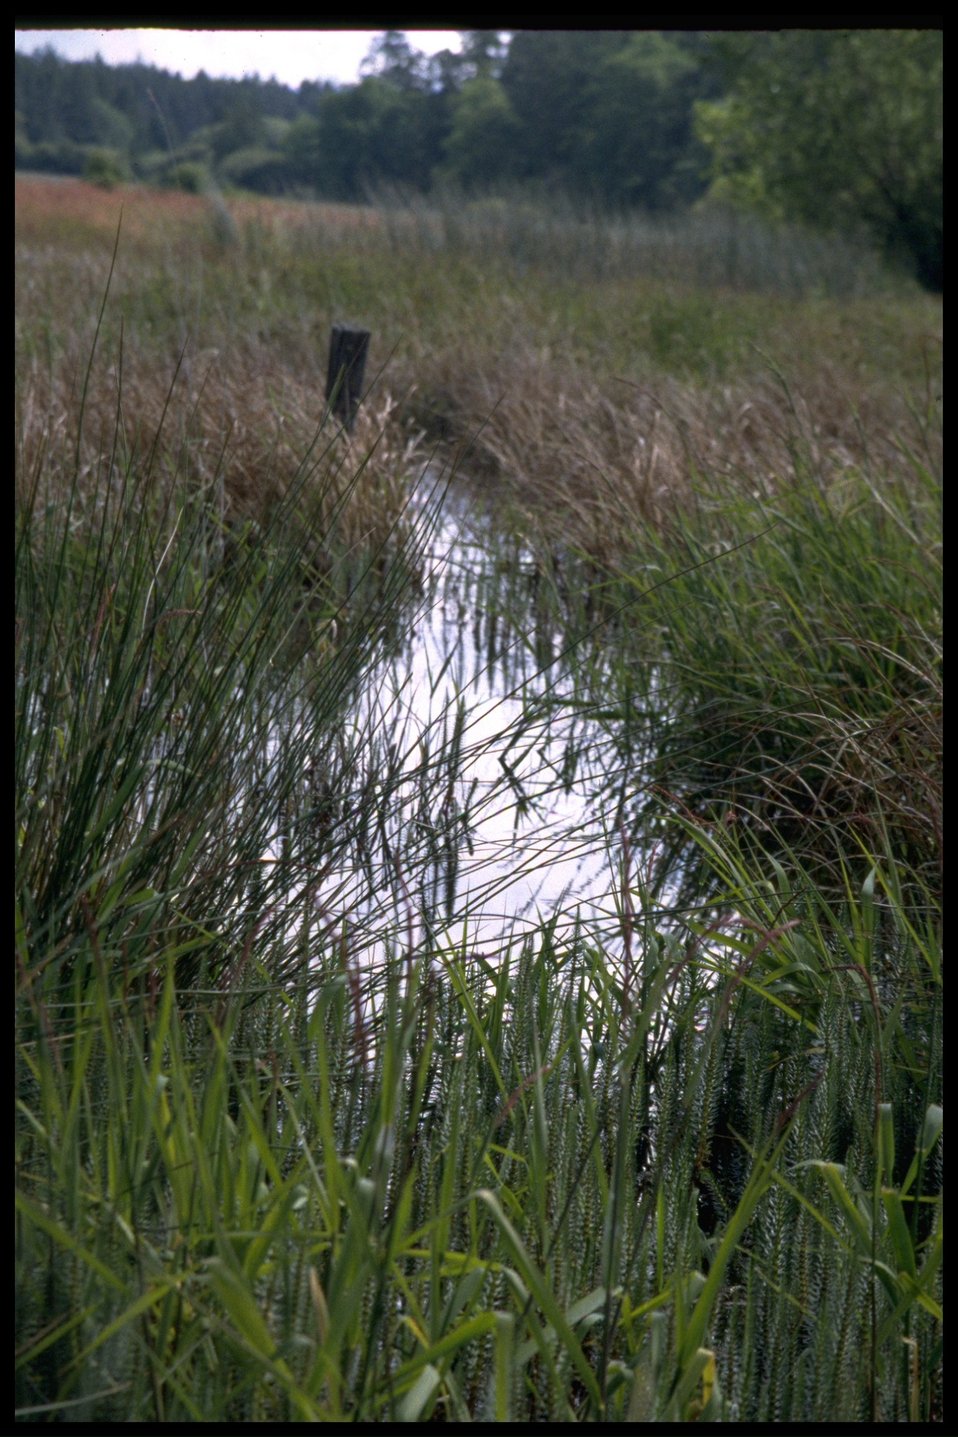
Chadwick Hill Marsh.